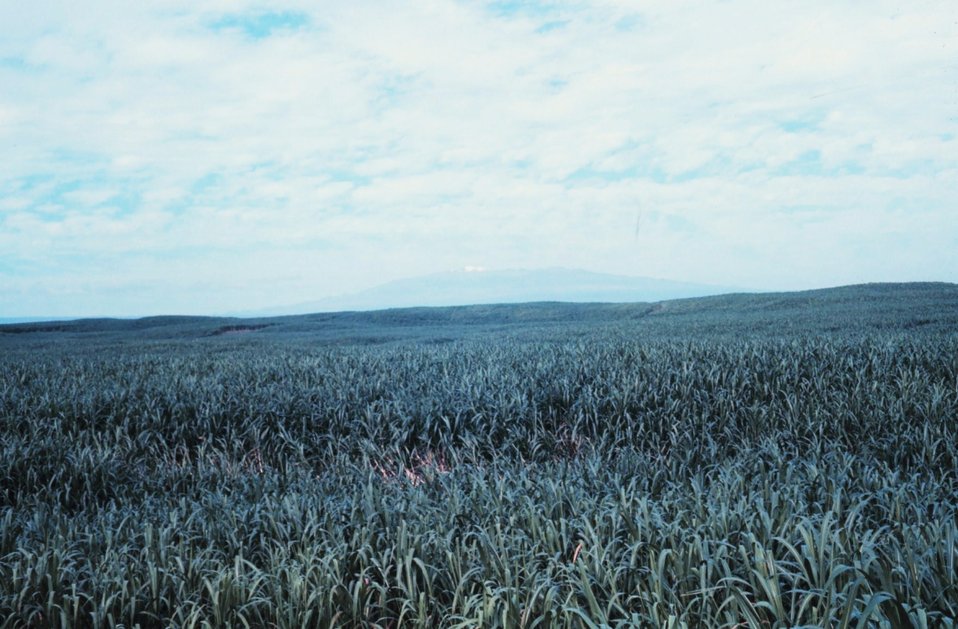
Mauna Loa seen over a cane field